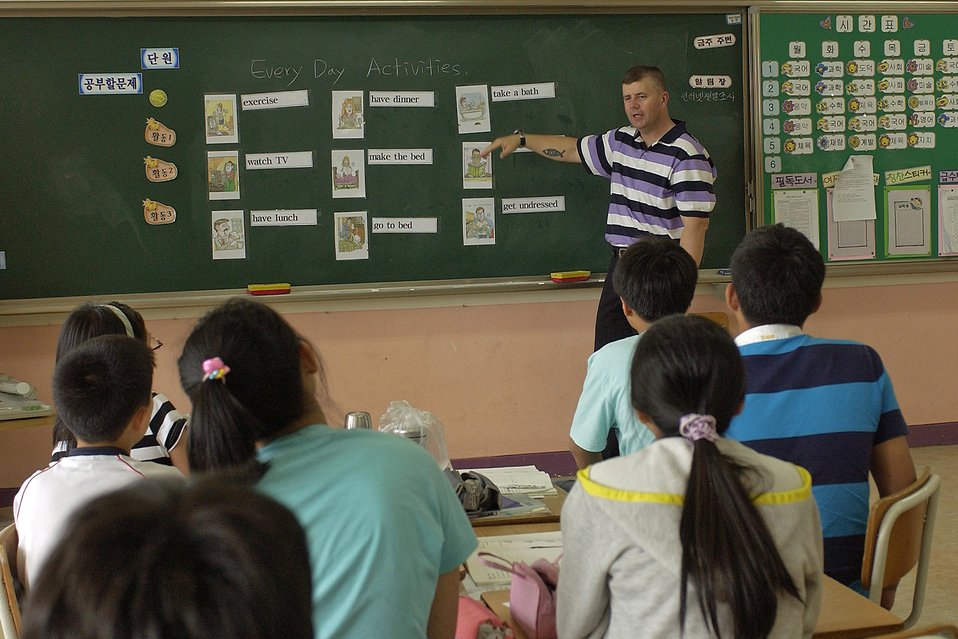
Good neighbors

Master Sgt. Dean McKendree teaches children how to speak English during an English camp Aug. 1 at Sinpung Elementary School in Gunsan City, South Korea. The camp is supported by volunteers from the 8th Fighter Wing at Kunsan Air Base as a part of the Good Neighbor Program. The school teaches English skills to students over a three-week period. Sergeant McKendree is assigned to the 80th Aircraft Maintenance Squadron.